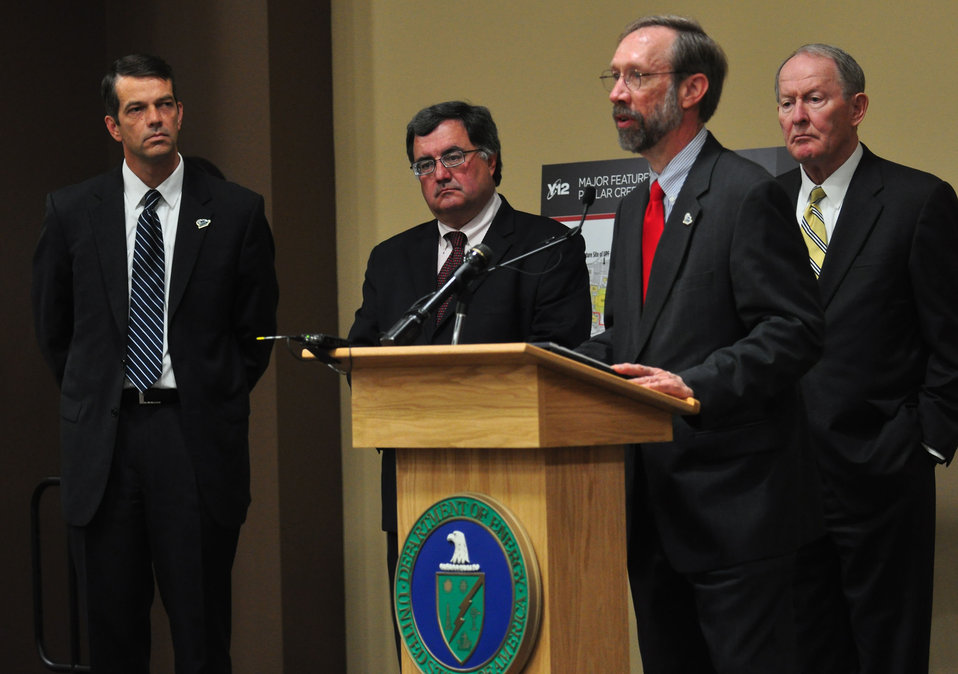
Mercury Cleanup Press Conference Y-12 Oak Ridge Speaking Stan Meiburg EPA Deputy Regional Administrator for Region 4

13-051 DOE photo Lynn Freeny 5-3-2013 Oak Ridge Tennessee left to right Oak Ridge EM Manager Mark Whitney,Tennessee Department of Environment and Conservation Commissioner Robert Martineau, EPA Deputy Regional Administrator for Region 4 Stan Meiburg, and U.S. Sen. Lamar Alexander (R-Tenn.)